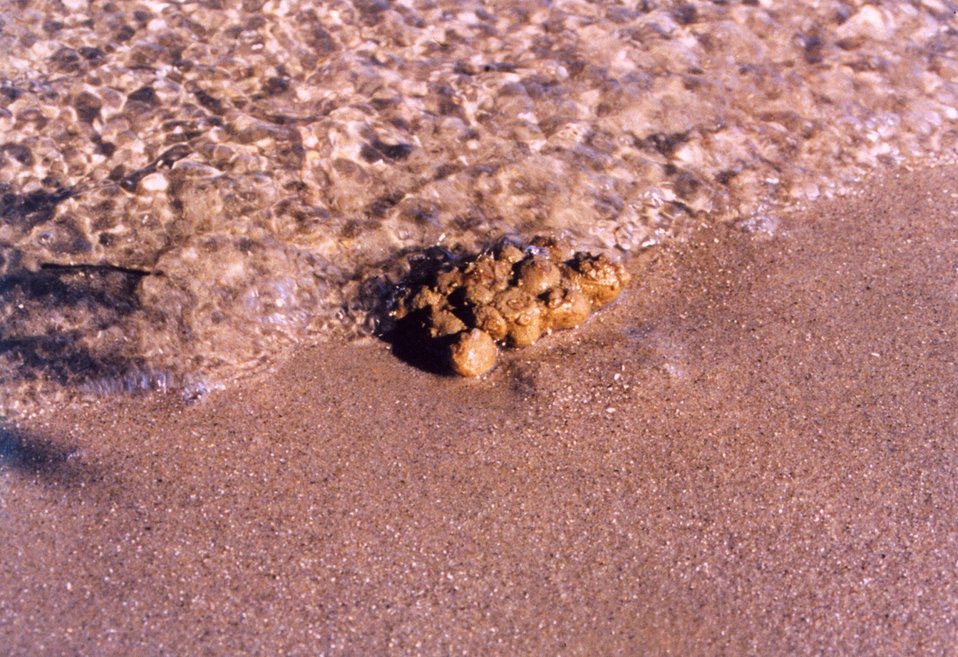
Sea squirts washing ashore.